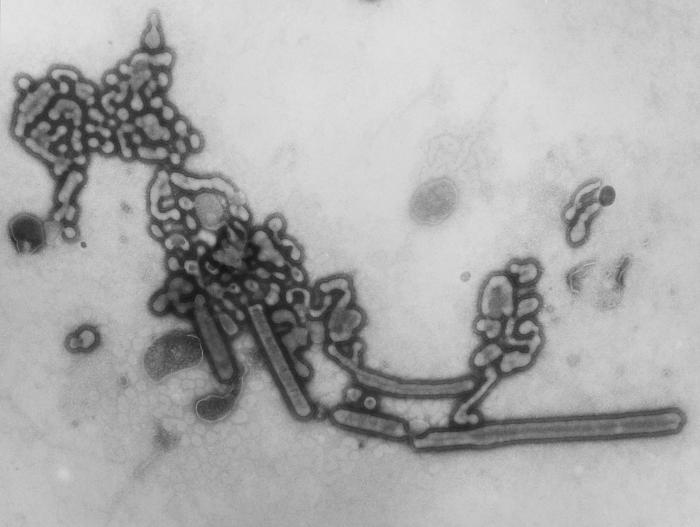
This transmission electron micrograph (TEM) depicted Russian influenza-A H1N1, (A/USSR/90/77 strain), virions, which had been magnified 189,000x.Influenza type A viruses are divided into subtypes based on two proteins on the surface of the virus. These proteins are called hemagglutinin (H) and neuraminidase (N). The current subtypes of influenza A viruses found in people are A(H1N1) and A(H3N2). Influenza B virus is not divided into subtypes. Influenza A (H1N1), A(H3N2), and influenza B strains are included in each year's influenza vaccine.